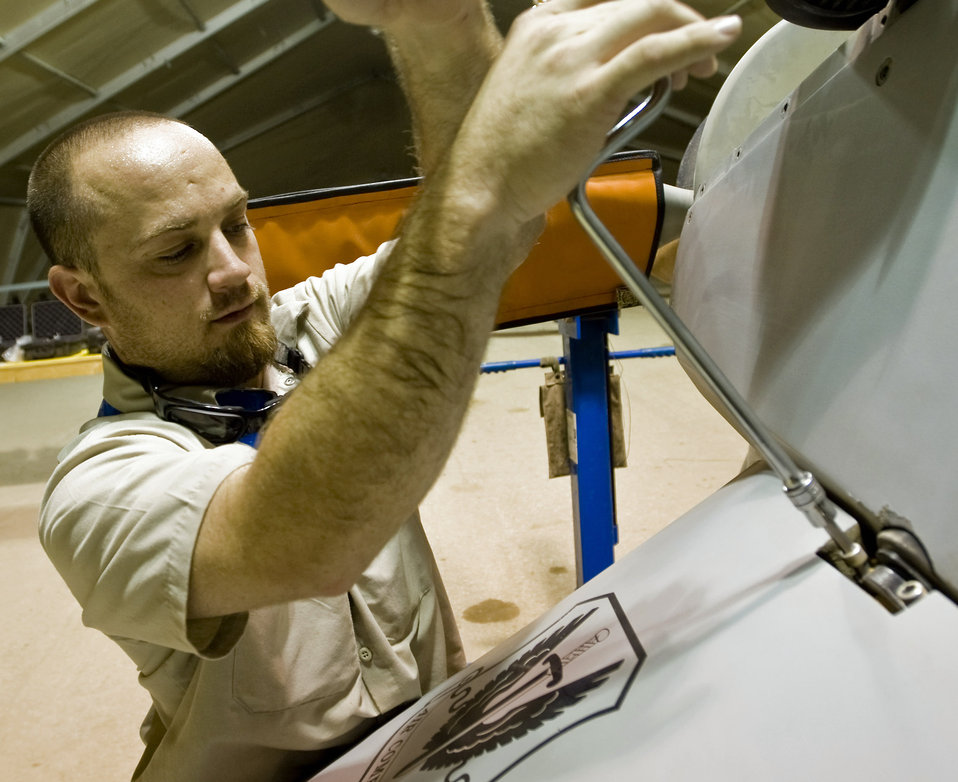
Night watch

Antonio McEver performs post-flight maintenance on an MQ-1 Predator Aug. 11 at Ali Base, Iraq. The Predator is a medium-altitude, long-endurance remotely piloted aircraft designed to interdict and conduct armed reconnaissance against critical and perishable targets. Mr. McEver is assigned to the 46th Expeditionary Reconnaissance and Attack Squadron Det. 1 here.